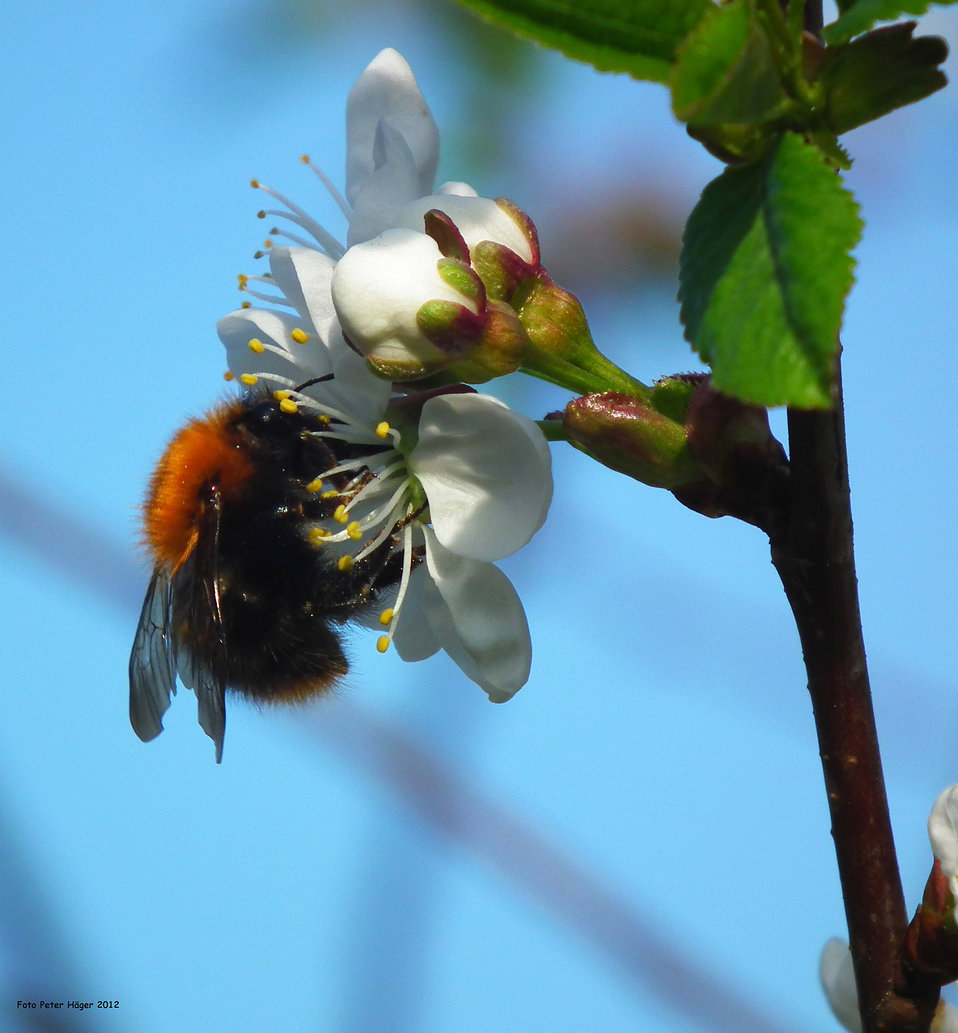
Bumblebee

On a cherry blossoms.